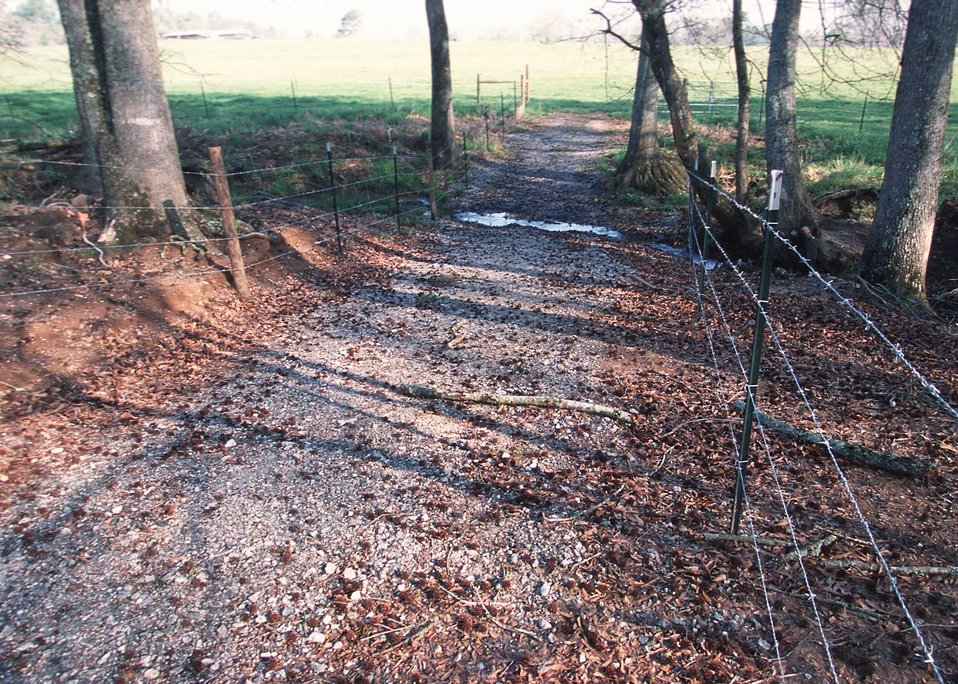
Concrete water crossing for livestock. Buffers and fencing for livestock exclusion are also part of the NRCS practices Georgia.